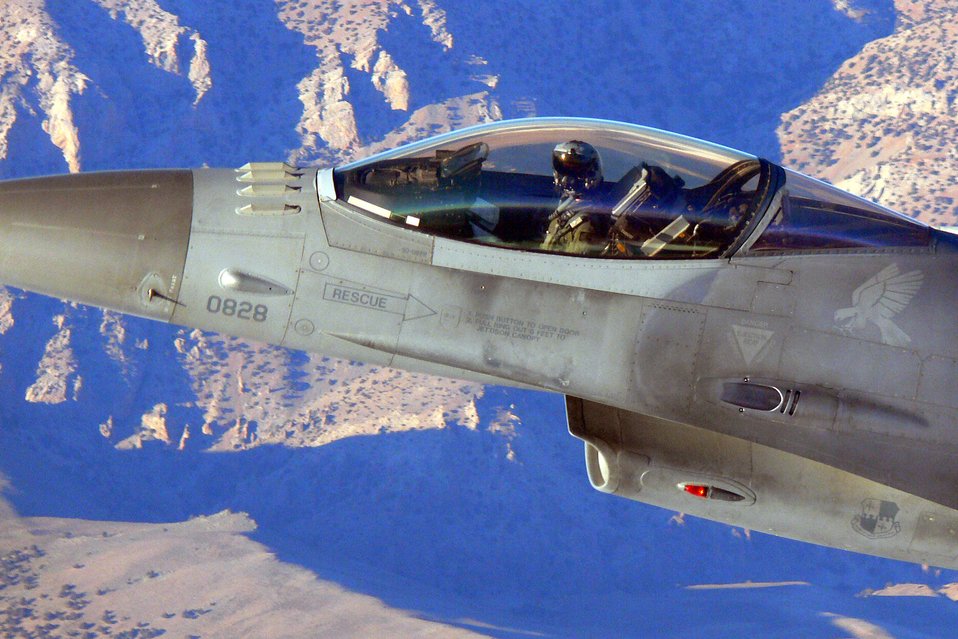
U.S., Turkish forces team up in Anatolian Eagle

Col. Darryl Roberson pulls into tight formation with another F-16 Fighting Falcon over the Turkish mountains after completing the final mission of Exercise Anatolian Eagle, conducted at Konya Air Base. Colonel Roberson is commander of the 52nd Fighter Squadron at Spangdahlem Air Base, Germany.